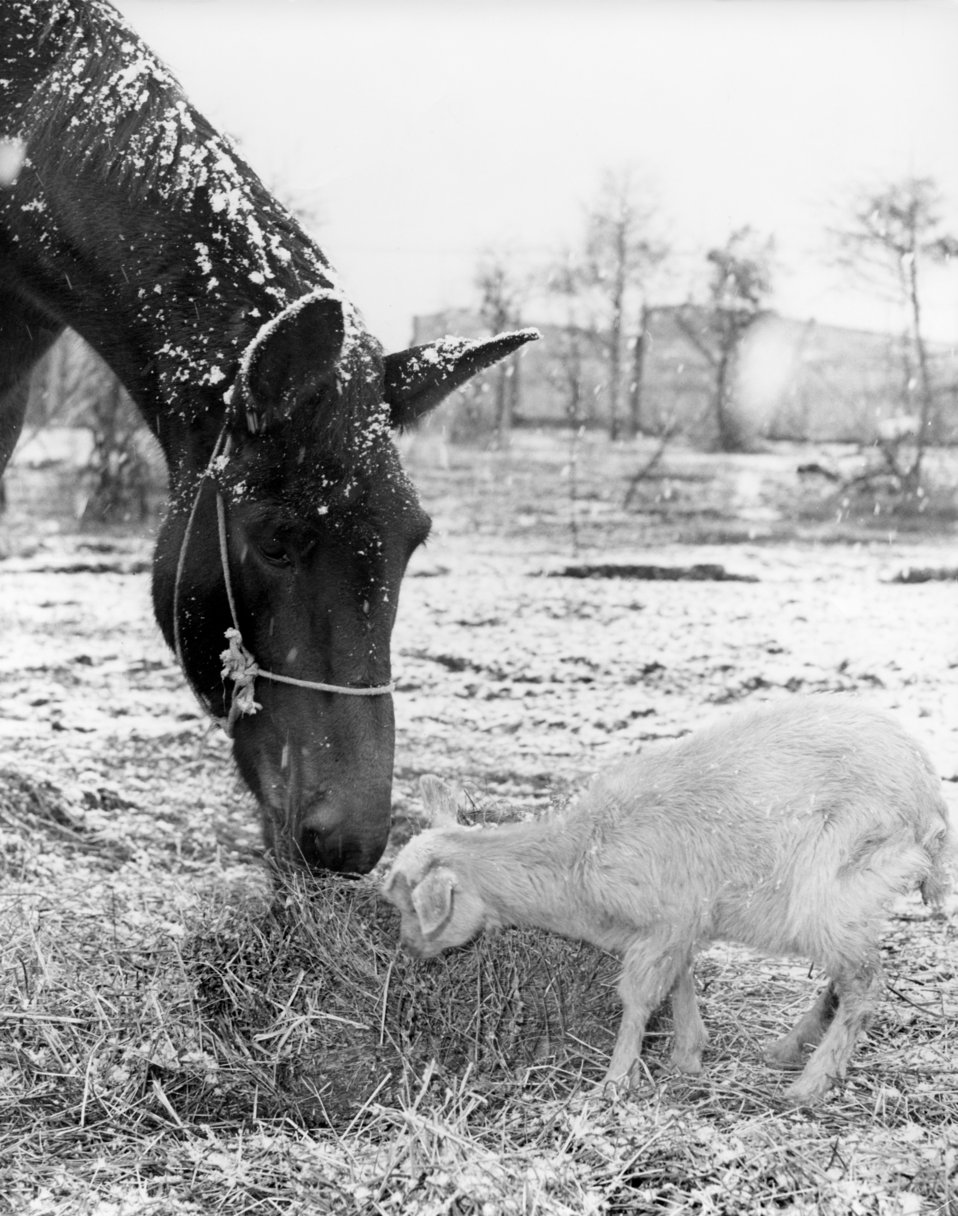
Horse and Goat 1947 Oak Ridge

3346 DOE photo Ed Westcott 3-1947 Oak Ridge Tennessee